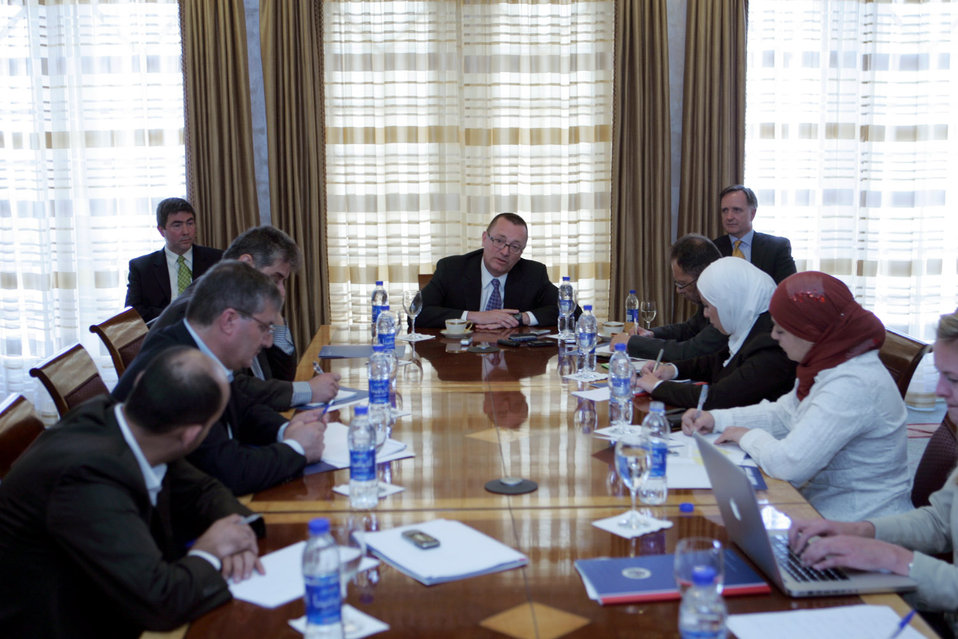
Assistant Secretary Feltman Speaks to Journalists in Jordan

Assistant Secretary of State for Near Eastern Affairs Jeffrey Feltman speaks to journalists in Amman, Jordan, on May 3, 2011.